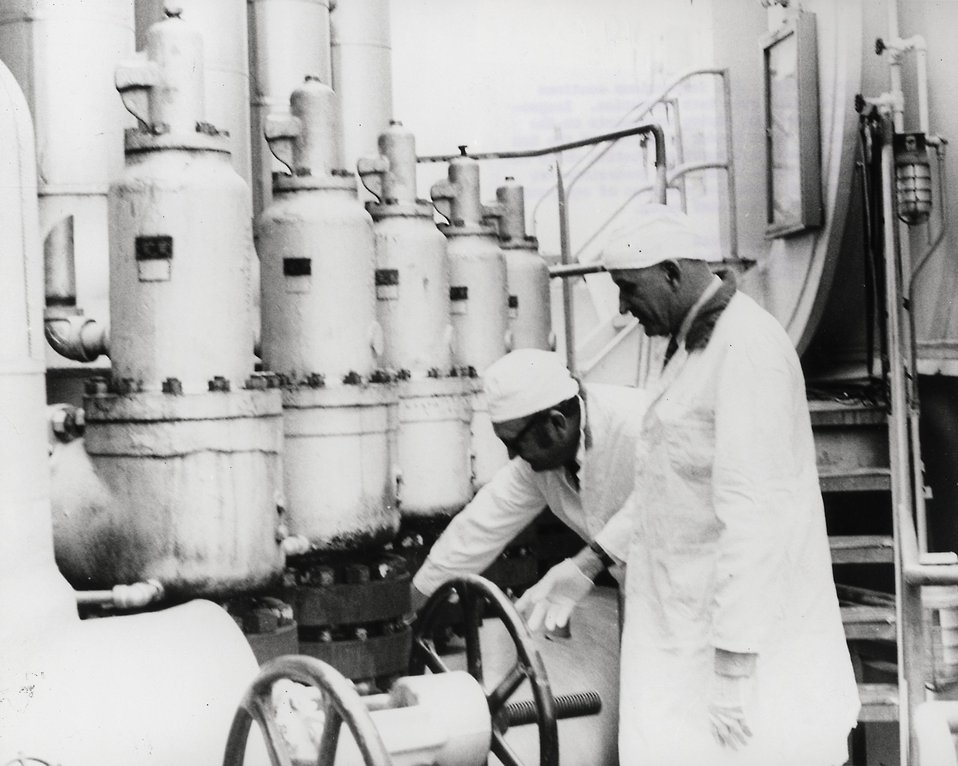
AEC inspections continue after a reactor plant goes into operation. Inspectors are shown examining piping restraints on the main steam safety valve header at Unit-1 of the San Onofre (Calif.) Circa 1973.